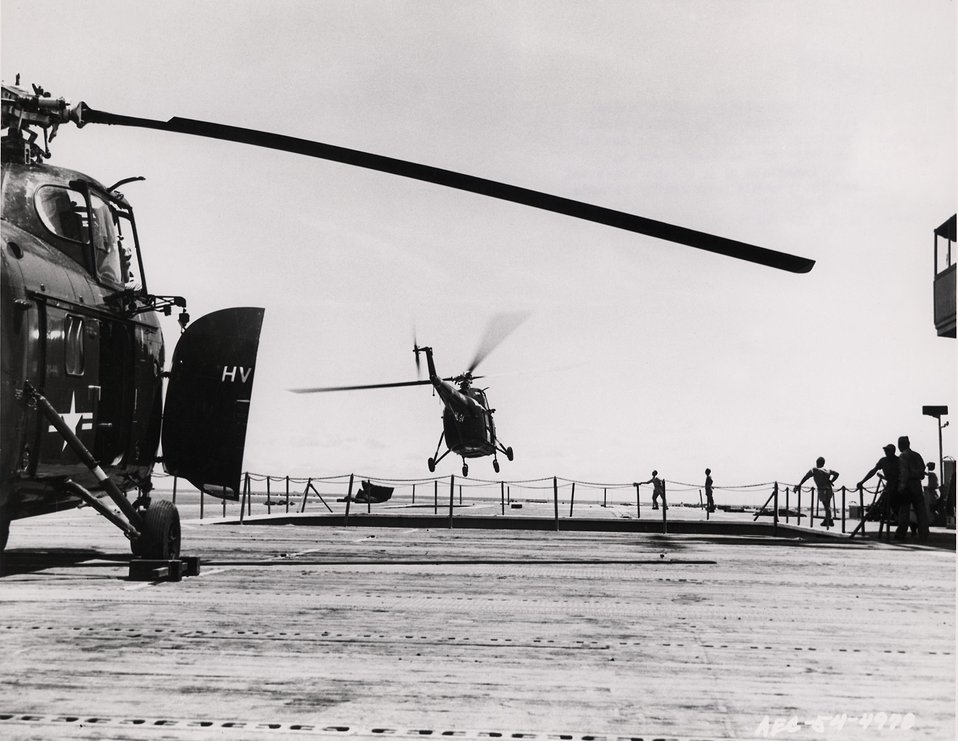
Almost immediately after the detonation, Navy helicopters, manned by radiological safety monitors, take off from the deck of one of the ships of the Task Force to examine the immediate area of the blast and to recover instruments from nearby islands.